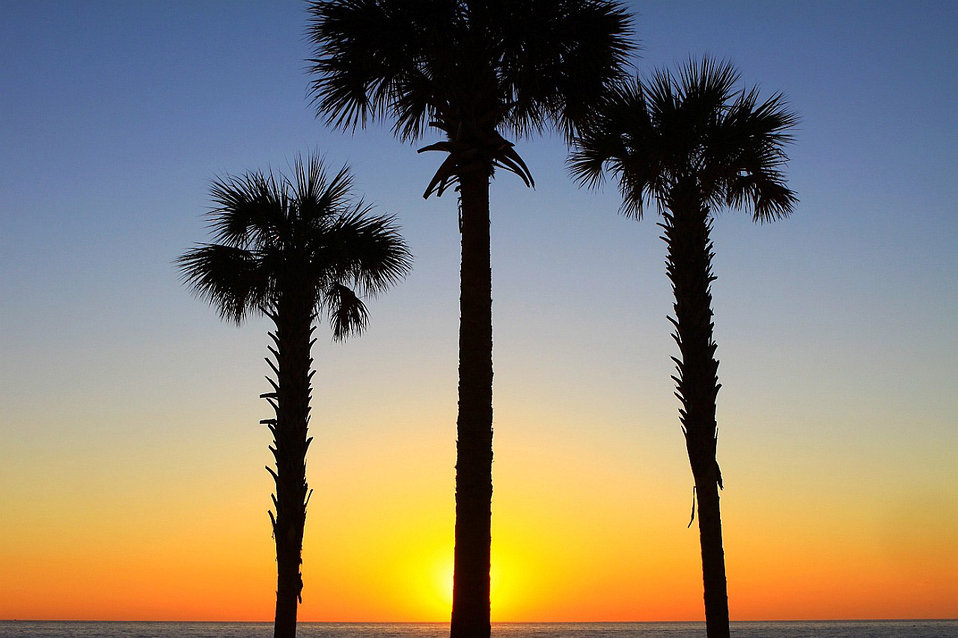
Florida sunrise

Sun behind the palm tree.